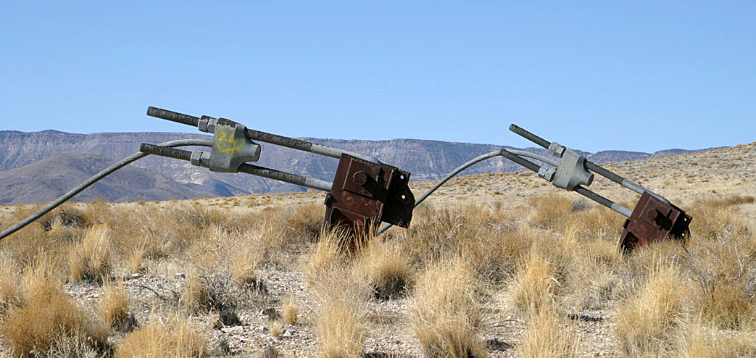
NNSS Nuclear Testing Artifacts Become Part of U.S. Cultural Archive

Stanchions are among the remnants of Smoky Tower.

The Nevada National Security Site’s (NNSS) historic Smoky site may soon join a long list of former nuclear testing locations eligible for inclusion in the National Register of Historic Places. The Desert Research Institute (DRI) is currently working alongside the Nevada Site Office (NSO) to determine the eligibility of Smoky and a number of other EM sites slated for cleanup and closure.